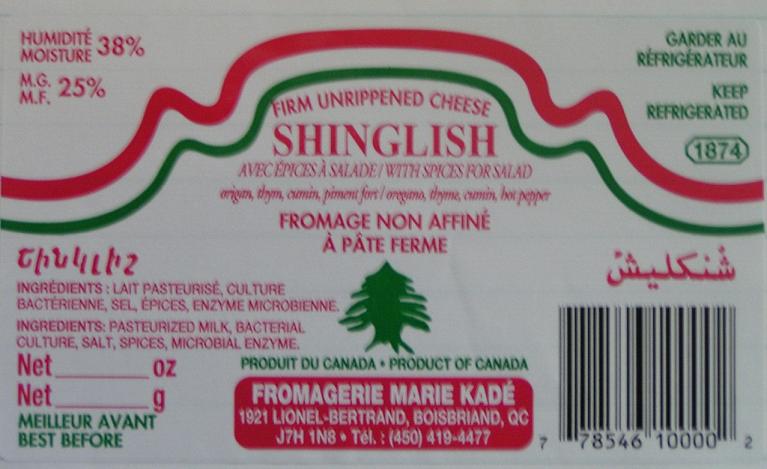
RECALLED - Cheese

December 23, 2011 - Kradjian Imp Co. Recalls Cedar Brand Tresse Cheese and Cedar Brand Shinglish Cheese Because of Possible Health Risk.